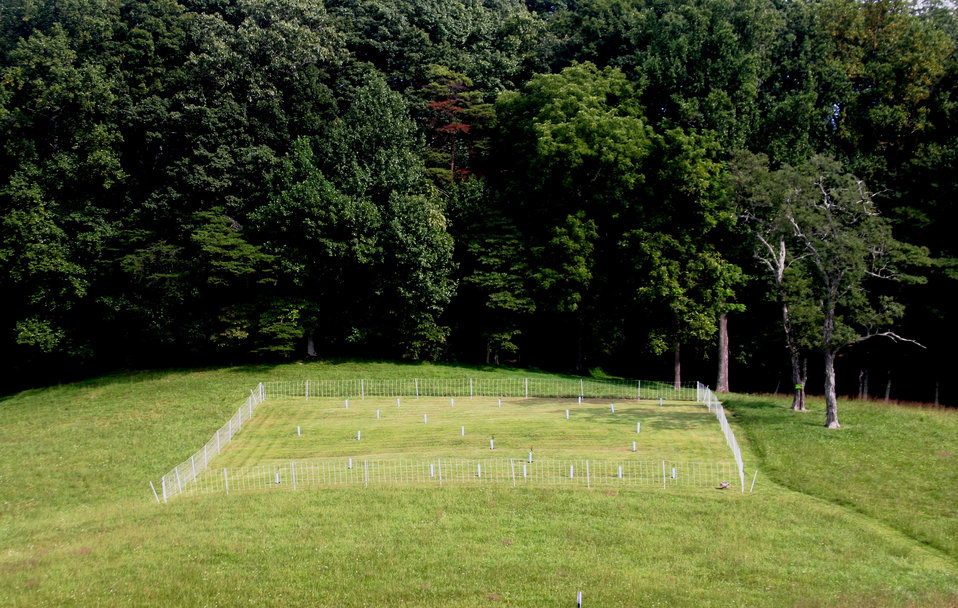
Chesnut 2a

A U.S. Department of Agriculture (USDA) Natural Resource Conservation Service (NRCS) Conservation Innovation Grant enables the American Chestnut Foundation to research ways to help the American chestnut, a vanishing species, survive.